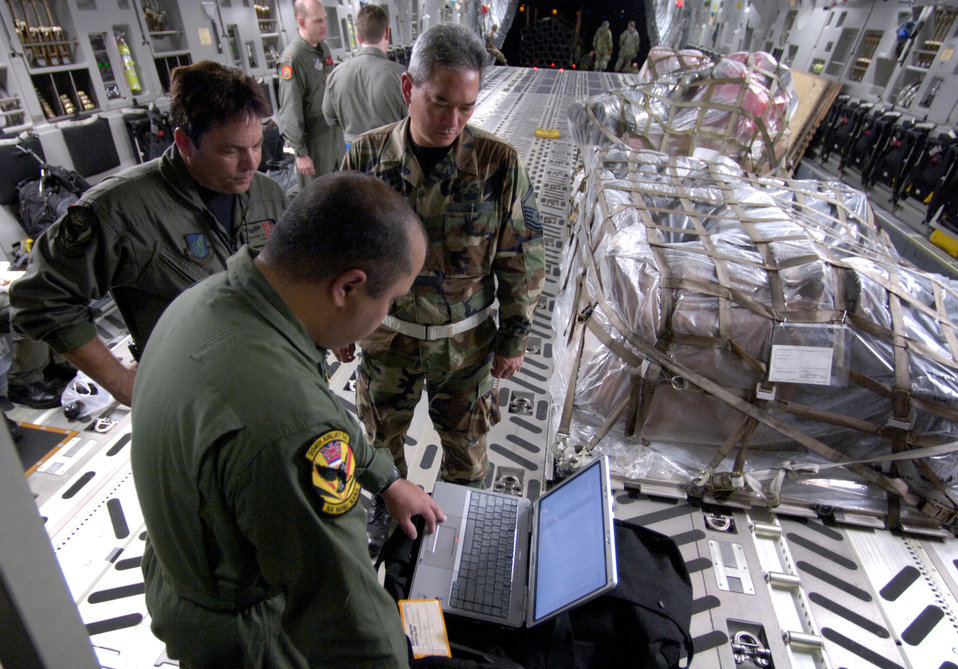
C-17s deliver relief to Kauai

Staff Sgt. Ivan Sanches, Staff Sgt. Antonio Perry Jr. and Master Sgt. Bruce Hara look over the loading plan for a C-17 Globemaster III at Hilo International Airport, Hawaii Thursday, March 16, 2006. The C-17 delivered recovery equipment to the island of Kauai, Hawaii after a dam burst, isolating thousands of people along the island's north shore. Sergeants Sanches and Perry are with the Hawaii Air National Guard's 204th Airlift Squadron. Sergeant Hara is with the Guard's 291st Combat Communications Squadron.